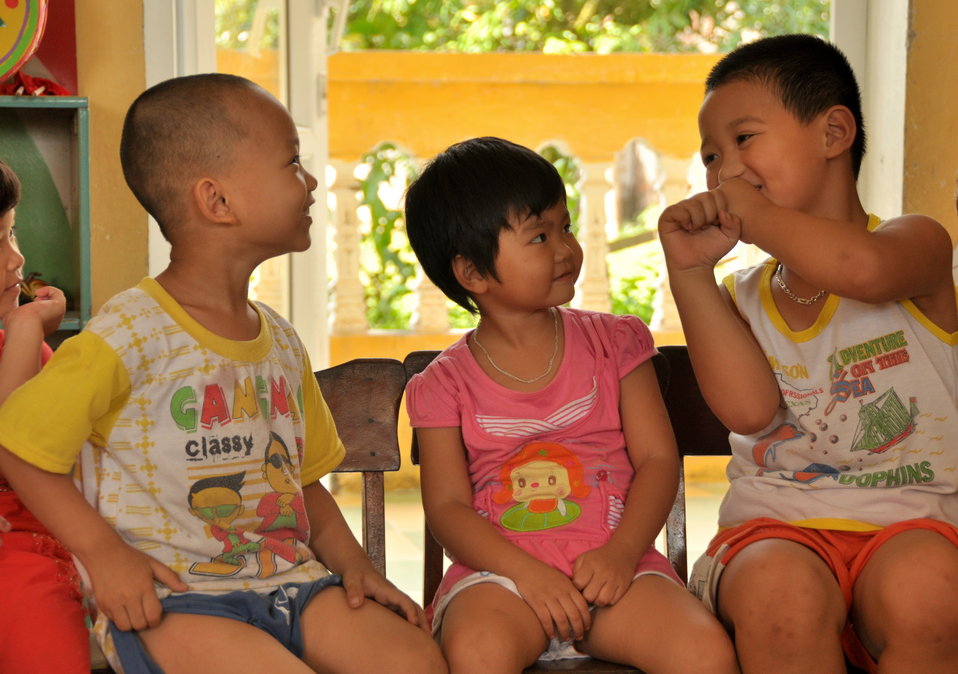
USAID Delivers Deworming Medication to Kindergartners in Nam Dinh Province

Children of Vietnam's Nam Dinh Province receive deworming medicine in a program supported by USAID and World Vision Australia.
June 1, 2013